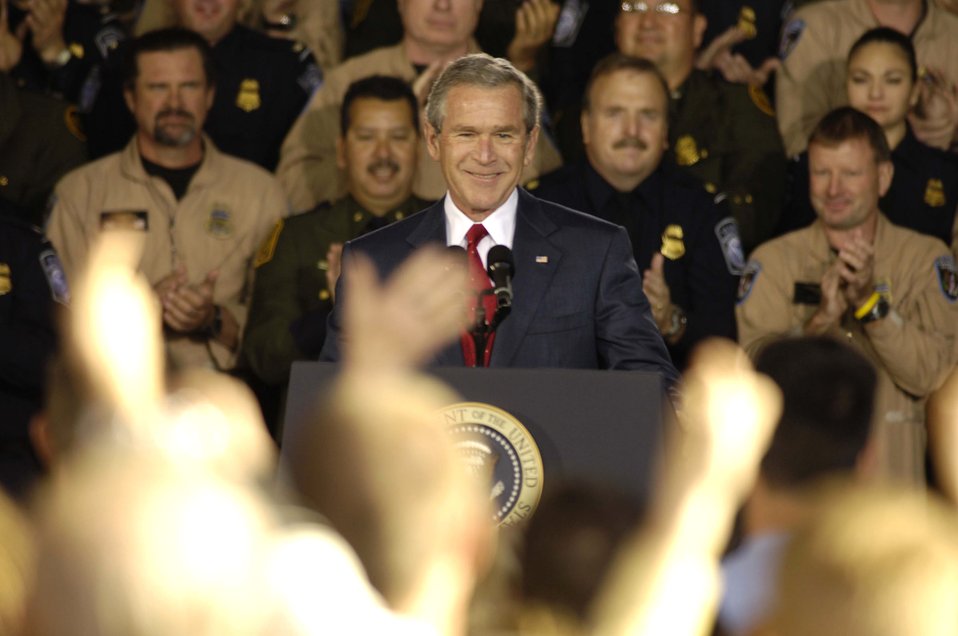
Bush visits Arizona

DAVIS-MONTHAN AIR FORCE BASE, Ariz. (AFPN) -- President George W. Bush speaks at a U.S. Border Patrol hanger. President Bush came to speak about current border patrol issues and immigration laws and policies.